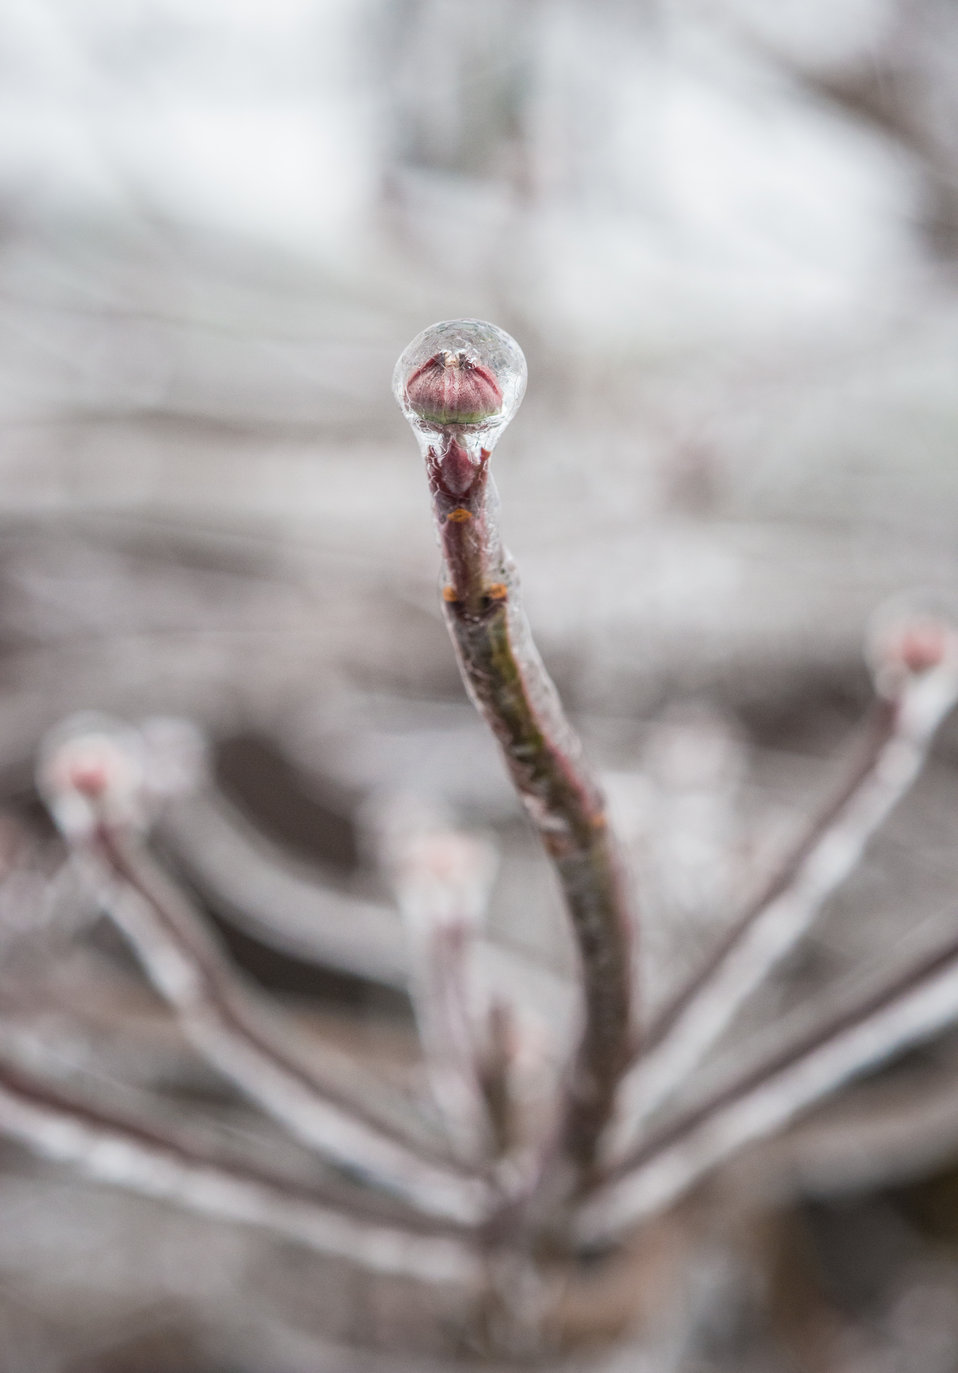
Freezing rain covers plants and trees in Falls Church, VA on Monday, Dec. 9, 2013.